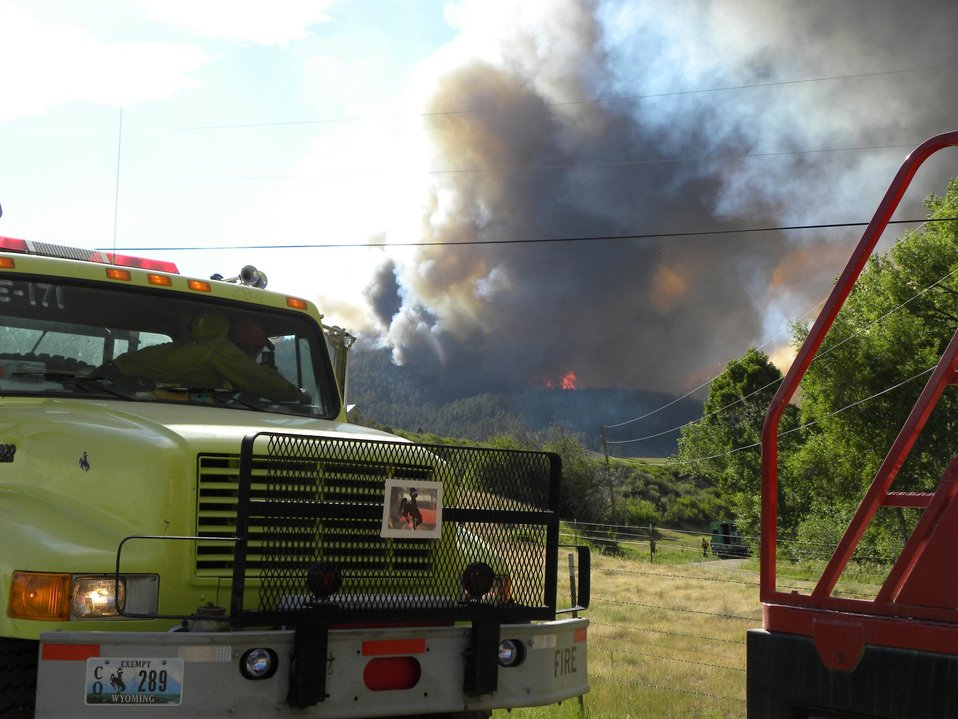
Smoke and flames rise in the air at the High Park Wildfire on the Arapaho and Roosevelt National Forests and Pawnee National Grassland on Tuesday, June 19, 2012. The High Park Wildfire located approximately 15 miles west of Fort Collins, CO has consumed over 65,738 acres of forest and grassland with approximately 189 homes destroyed. Over 1,773 personnel from the U.S. Forest Service (FS), state and local resources are fighting the wildfire and have achieved 55% containment as of June 20, 2012. The High Park Wildfire began on June 9. 2012 because of a lightening strike on private land.